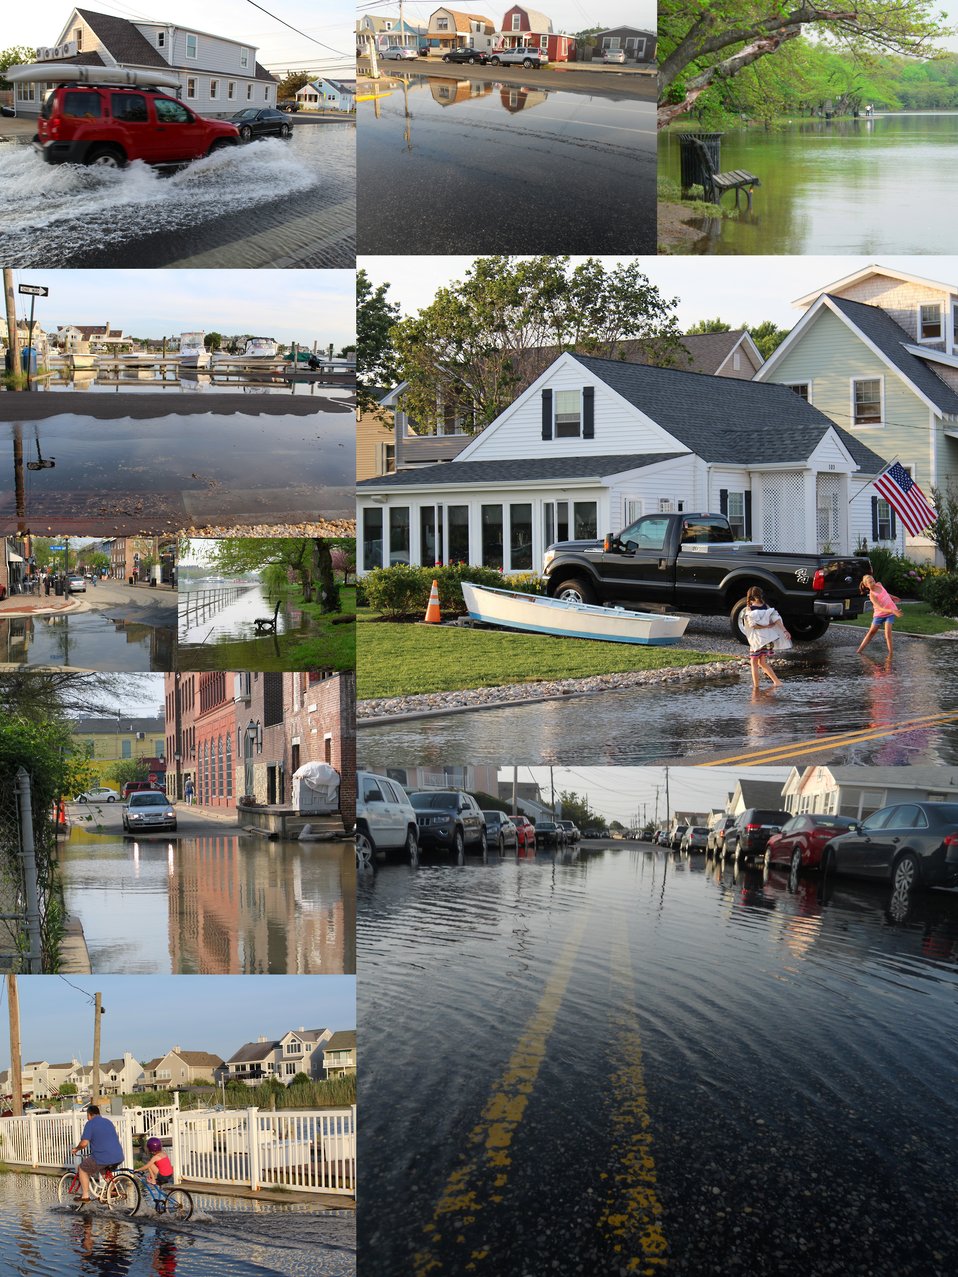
Back to the Future? #ActOnClimate

Back to the future or today? This compilation of photos submitted to State of the Environment www.flickr.com/groups/ourenvironment shows us what our future holds with sea level rise and increased coastal flooding. Read more at go.usa.gov/ja7R

Photo credits:
(red suv) cre mc June 22, 2013, Manasquan, NJ
(New Jersey houses) tbird 220, June 22, 2013
(Washington, D.C.) jamal kadri1 April 19, 2011
(one way - boats) cre mc June 22, 2013, Manasquan, NJ
(girls- truck) cre mc June 22, 2013, Manasquan, NJ
Alexandria, VA, cre mc April 20, 2011
(bench and fence DC) jamal kadri1 April 19, 2011
(Alexandria, VA) cre mc, April 20, 2011
(dad and girl- bike) cre mc June 22, 2013, Manasquan, NJ
(New Jersey roadway) tbird 220, June 22, 2013